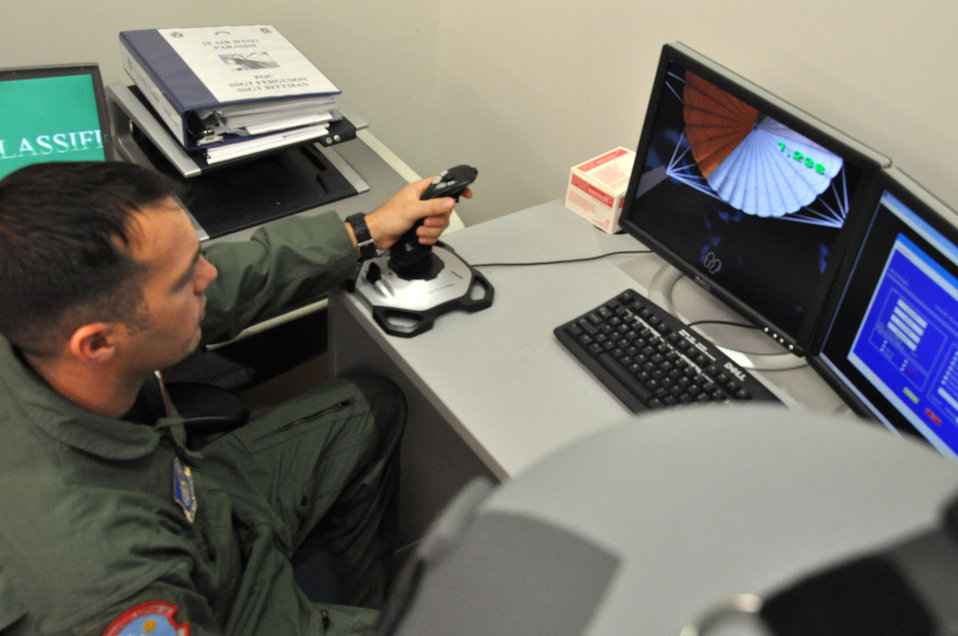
SERE Instructors

Staff Sgt. Anthony Bittman demonstrates what a crewmember sees when he or she is using the parachute simulator during refresher parachute training. Sergeant Bittman is a survival, evasion, resistance, escape, or SERE, instructor with the 15th Airlift Wing at Hickam Air Force Base, Hawaii.